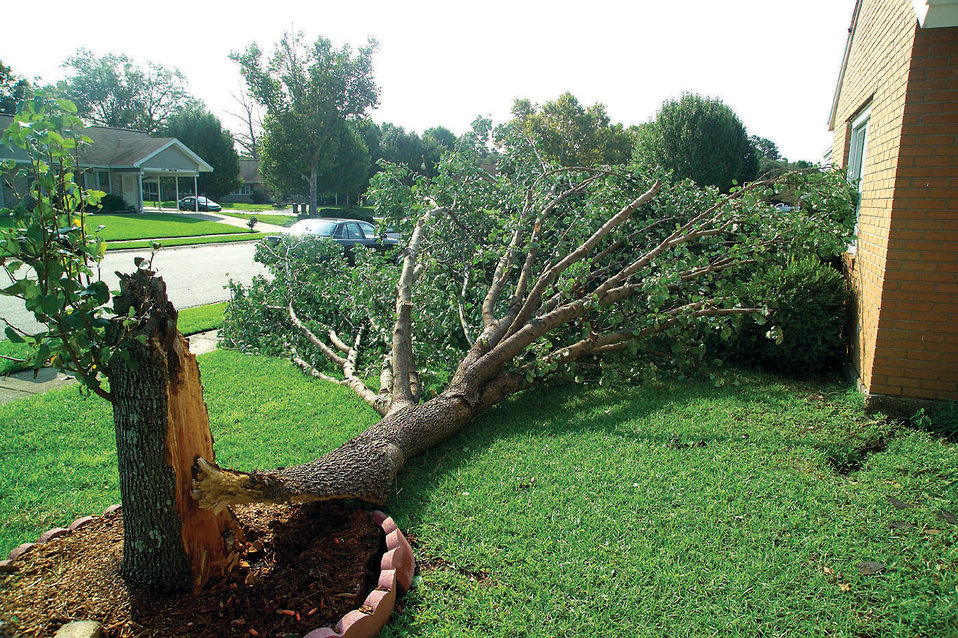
Gaston blows through Charleston

CHARLESTON AIR FORCE BASE, S.C. (AFPN) -- Tropical Storm Gaston hit here Aug. 29 causing minor damage and power outages. The outages began at 9 a.m. and all power was restored by 7 p.m. No aircraft were on the base when the storm hit. Most were supporting airlift missions worldwide, but 20 aircraft moved to MacDill Air Force Base, Fla., one to New Orleans and one to Navy North Island, Calif. Sixteen buildings, most of them in base housing, received minor damage.